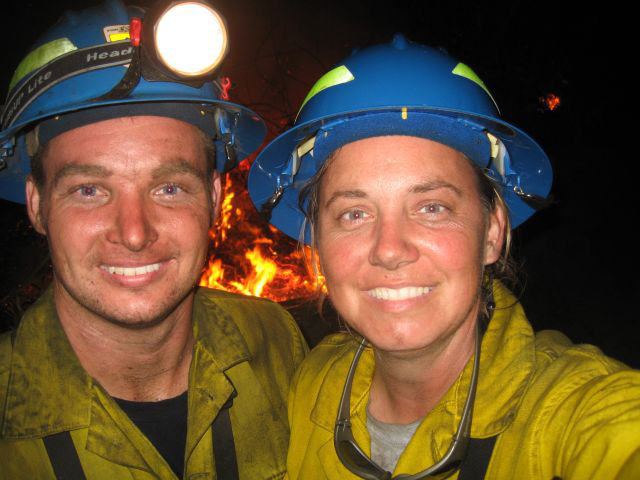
Trixie Smith and Jennifer Hinckley -- Southeast Region

Trixie Smith, a Coast Guard veteran, now works at St. Marks National Wildlife Refuge in Florida as the Lead Range/Forestry Technician (Fire). Jennifer Hinckley, a Navy wife, is a Prescribed Fire Specialist